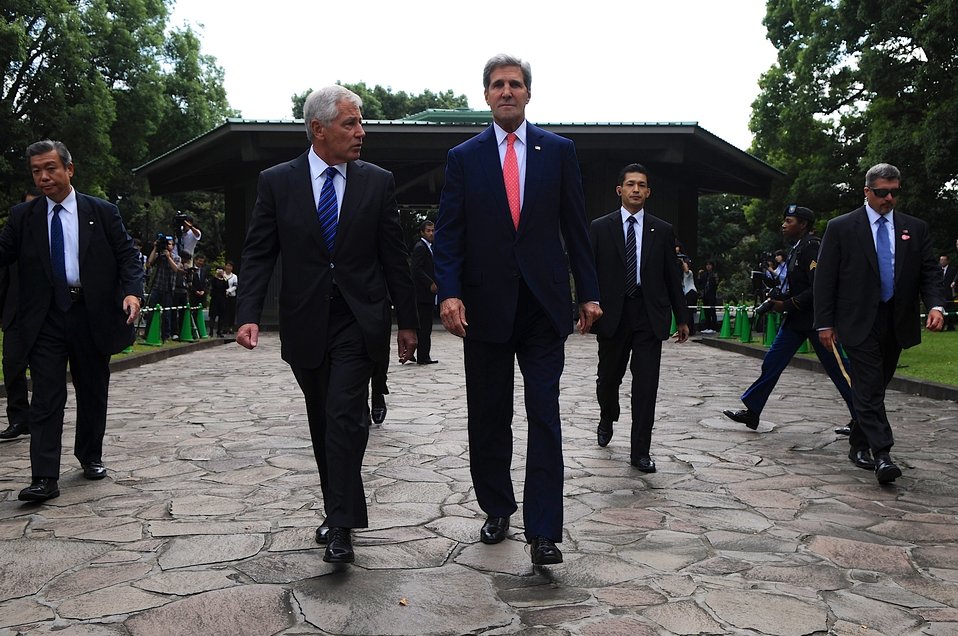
Secretary of State Kerry and Defense Secretary Hagel at at the Chidorigafuchi National Cemetery in Tokyo

U.S. Secretary of State John Kerry and U.S. Defense Secretary Chuck Hagel leave the Chidorigafuchi National Cemetery after laying wreaths before meeting with their Japanese counterparts in Tokyo on October 3, 2013.